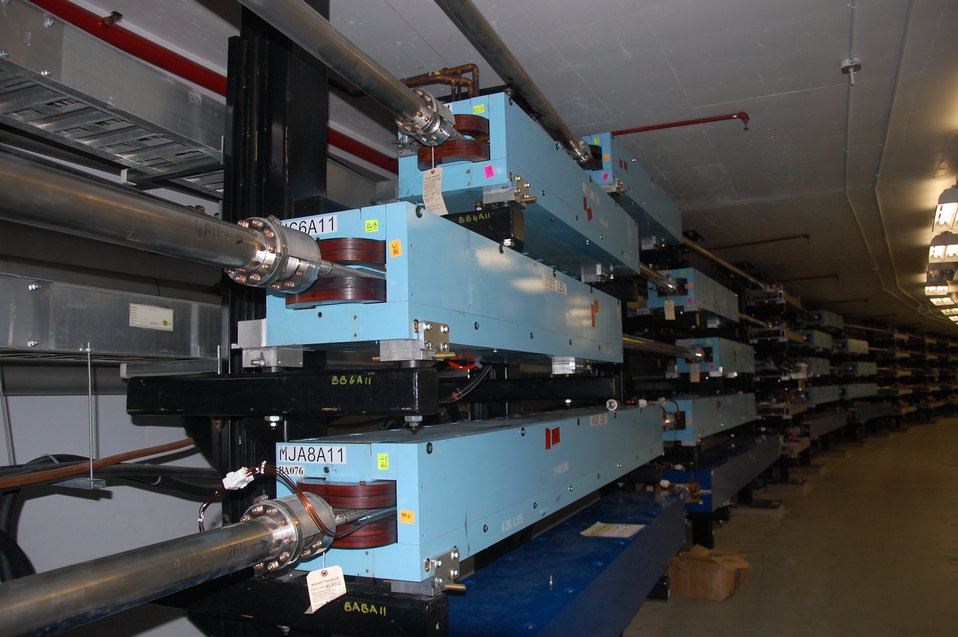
SHOWN ARE THE 12 GEV ARC MAGNETS AT THOMAS JEFFERSON NATIONAL ACCELERATOR FACILITY.

The Jefferson lab is built for nuclear physics research. Scientists use superconducting electron accelerating technology at the lab's Continuous Electron Beam Accelerator Facility (CEBAF) to conduct experiments. High energy electron beams from the accelerator allows scientists to probe the atoms nuclear, reveling how quarks make up protons, neutrons, and the nucleus itself.